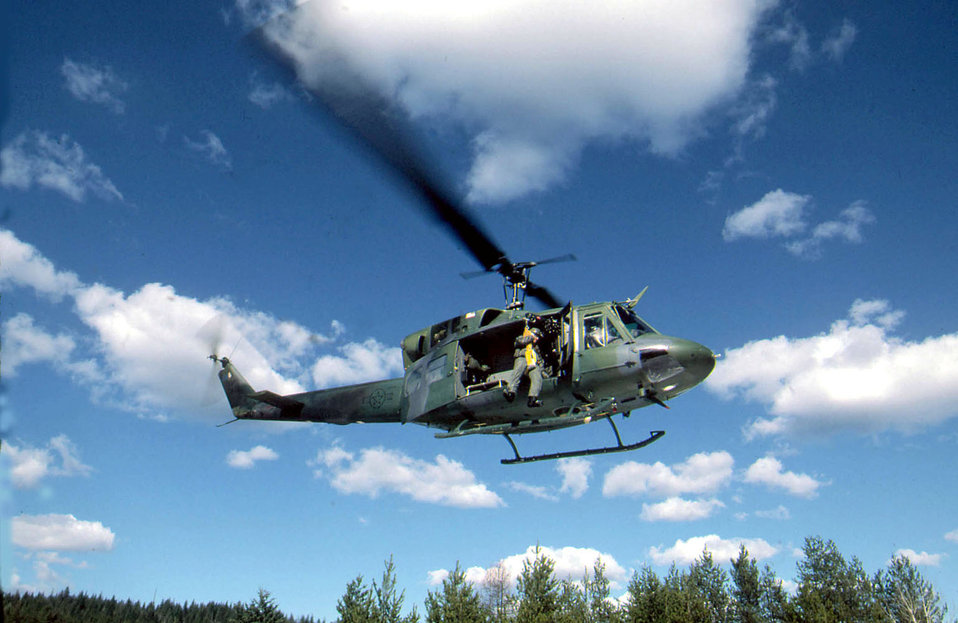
Fairchild Airmen rescue stranded hiker

A four-member UH-1N Huey crew from Fairchild Air Force Base, Wash., rescued a stranded hiker Dec. 4 after an avalanche killed two others hit in the Snoqualmie Pass area in Washington. The crew consisted of Capt. Amanda Somerville, the pilot; Capt. Evan Roth, the co-pilot, Tech. Sgt. Devin Fisher, the flight engineer; and Staff Sgt. Jason Weiss, the independent duty medical technician. The Airmen are assigned to the 36th Rescue Flight.